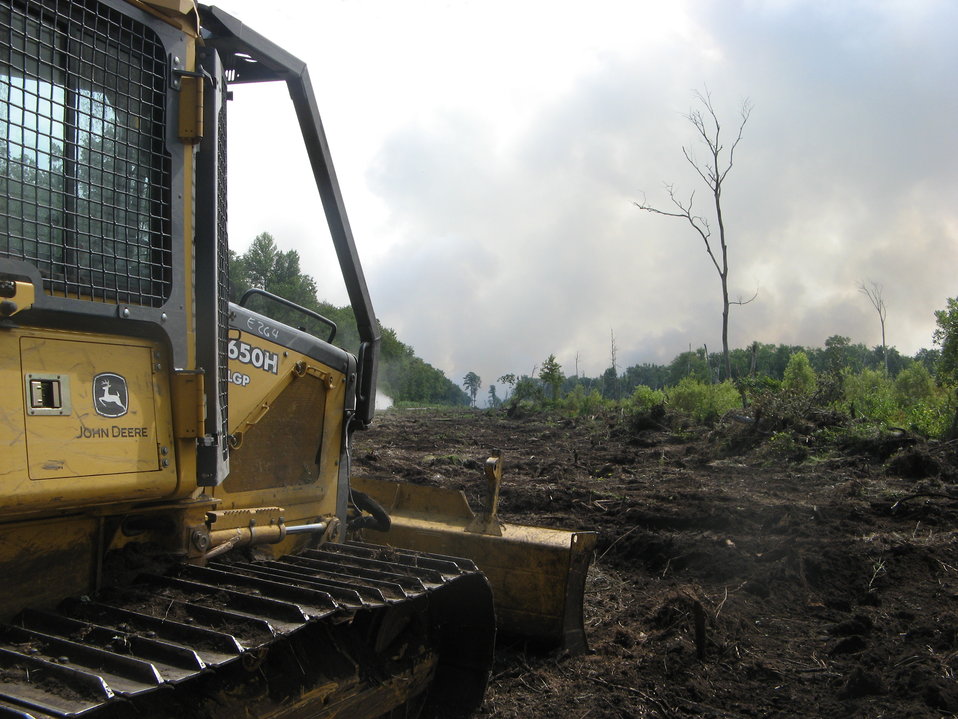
Improving fire lines

Suffolk, VA, Aug. 11, 2011. Bulldozers are being used to fortify fire lines along existing roads to contain the Lateral West wildfire at Great Dismal Swamp National Wildlife Refuge. Clearing vegetation along the road removes dry material that could fuel the fire and contribute to further spread.